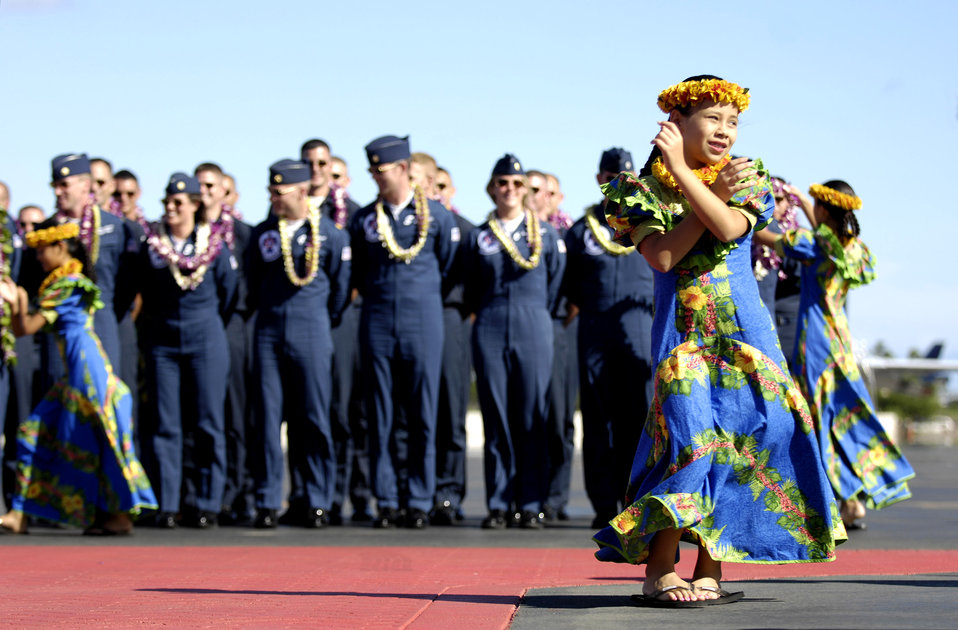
Thunderbirds arrive for Air Force Week Honolulu

Members of the Air Force Air Demonstration Squadron, the Thunderbirds, are welcomed to Hickam Air Force Base, Hawaii, Sept. 12. The team is performing as part of Air Force Week Honolulu, which runs Sept. 8 through 15.